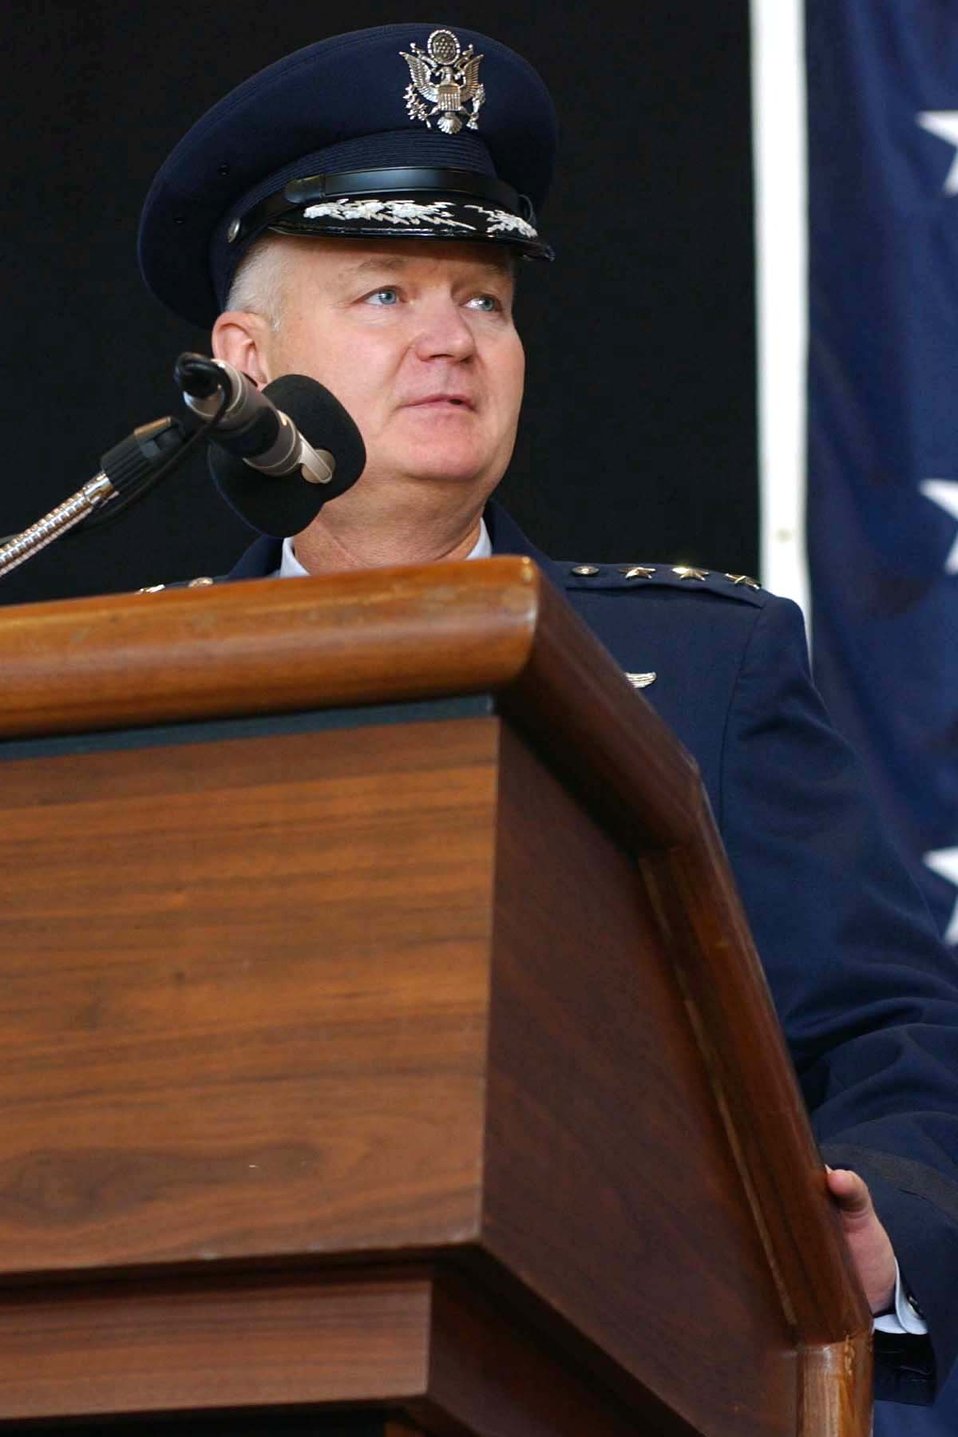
3rd Air Force reactivation

Lt. Gen. Robert D. Bishop Jr. speaks after being appointed commander of 3rd Air Force. The numbered Air Force was reactivated Dec. 1 during a ceremony at Ramstein Air Base, Germany.